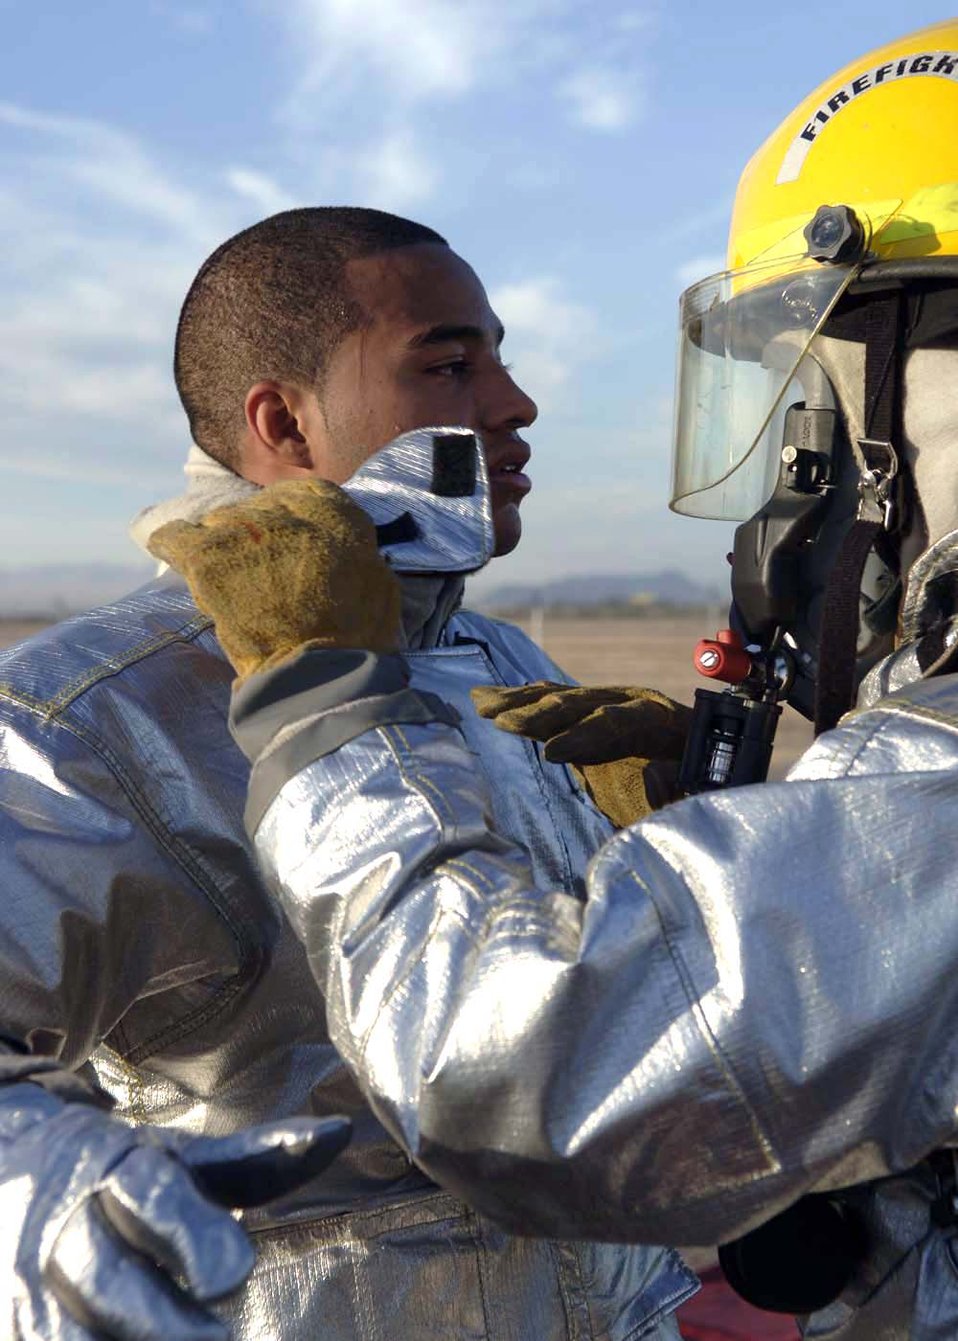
Training to fight fires together

A Davis-Monthan Air Force Base firefighter helps out a fellow wingman as part of processing through the decontamination stations Dec. 4 at Davis-Monthan AFB, Ariz. Exercise Vigilant Shield 07 is a joint Department of Defense and federal nuclear weapon accident exercise. The exercise scenario involved a C-17 Globemaster III carrying four nuclear weapons to be diverted to Davis-Monthan AFB due to simulated engine failure that caused an aircraft accident. Davis-Monthan firefighters, the Tucson Fire Department, Tucson Police Department, and many different agencies ranging form local to national levels responded to the simulated scene.